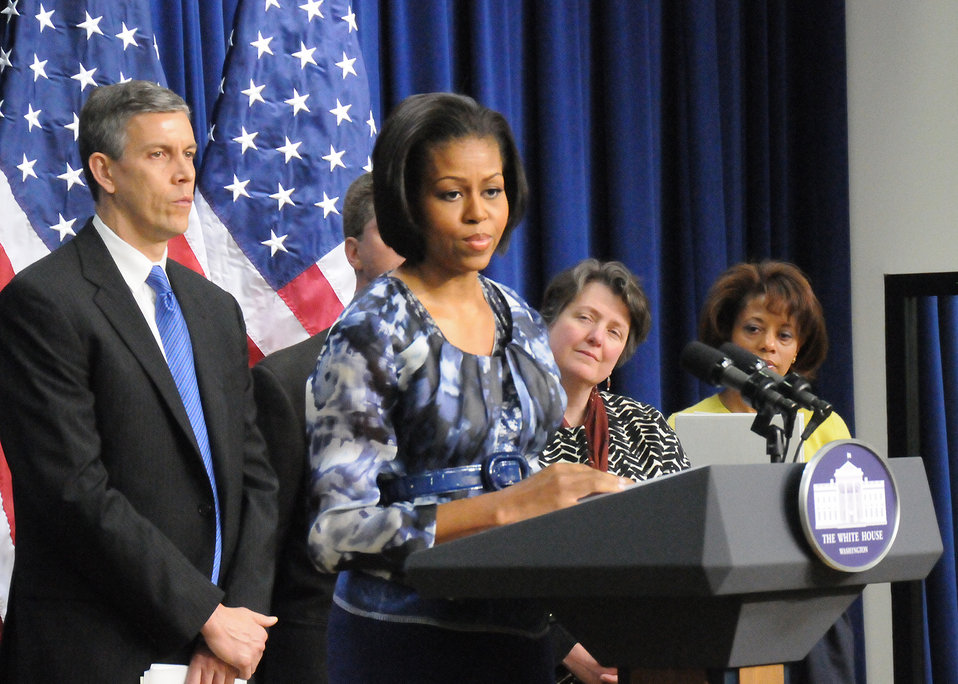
First Lady Michelle Obama and the Childhood Obesity Task Force announced its action plan, “Solving the Problem of Childhood Obesity Within a Generation,' during a press conference at the Eisenhower Executive Office Building in Washington, D. C., on Tuesday, May 6, 2010. (L to R Education Secretary Arne Duncan, Housing and Urban Development Secretary Shaun Donovan, Agriculture Deputy Secretary Kathleen Merrigan, and Domestic Policy Council Director Melody Barnes) USDA photo 10di1354- 62